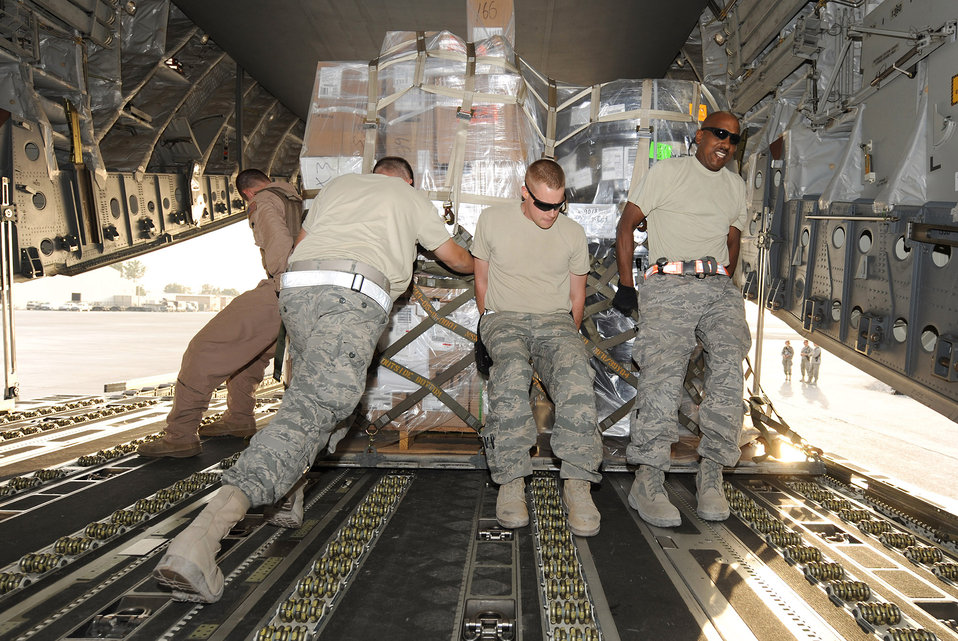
Port Dawgs

Airmen from the 451st Aerial Port Flight push a cargo pallet during an engine-running offload of a C-17 Globemaster III Sept. 29, 2010, at Kandahar Airfield, Afghanistan. The 451st APF handled more than 26 million pounds of cargo in September.